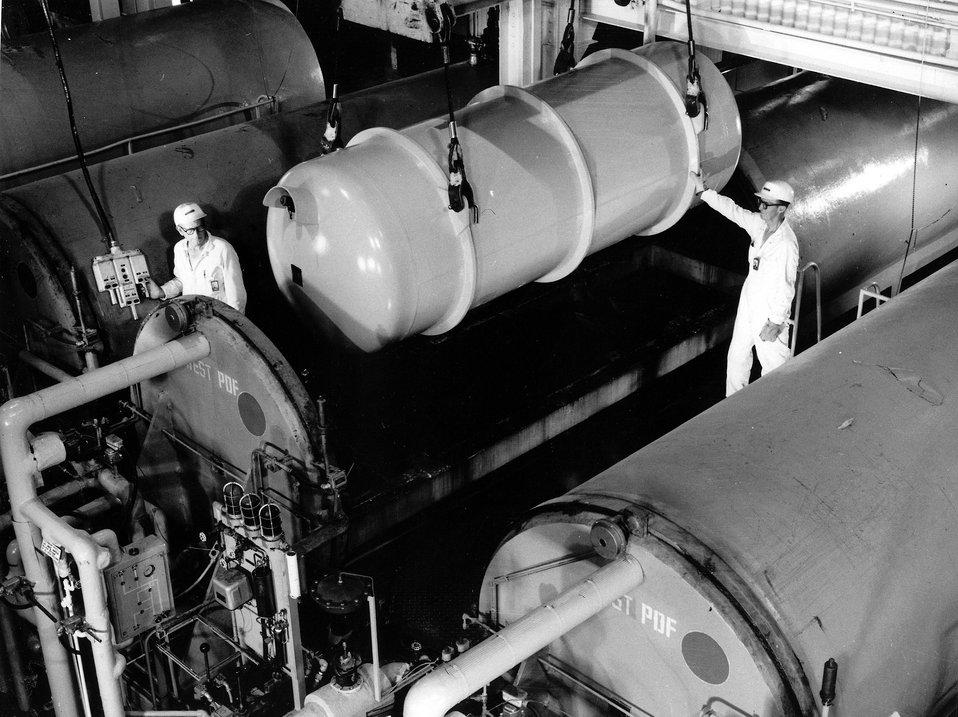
A cylinder of uranium hexaflouride is lowered into a giant autoclave at the Energy Research and Development Administration's Gaseous Diffusion Plant at Oak Ridge, Tennessee. Circa 1971.